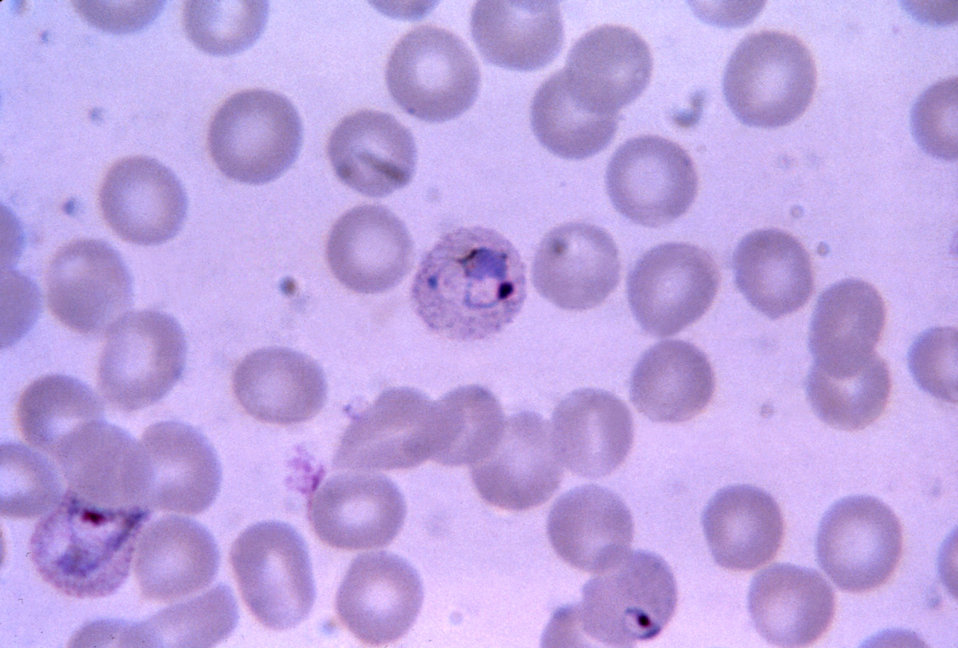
This thin film Giemsa stained micrograph depicts a young growing Plasmodium vivax trophozoite.